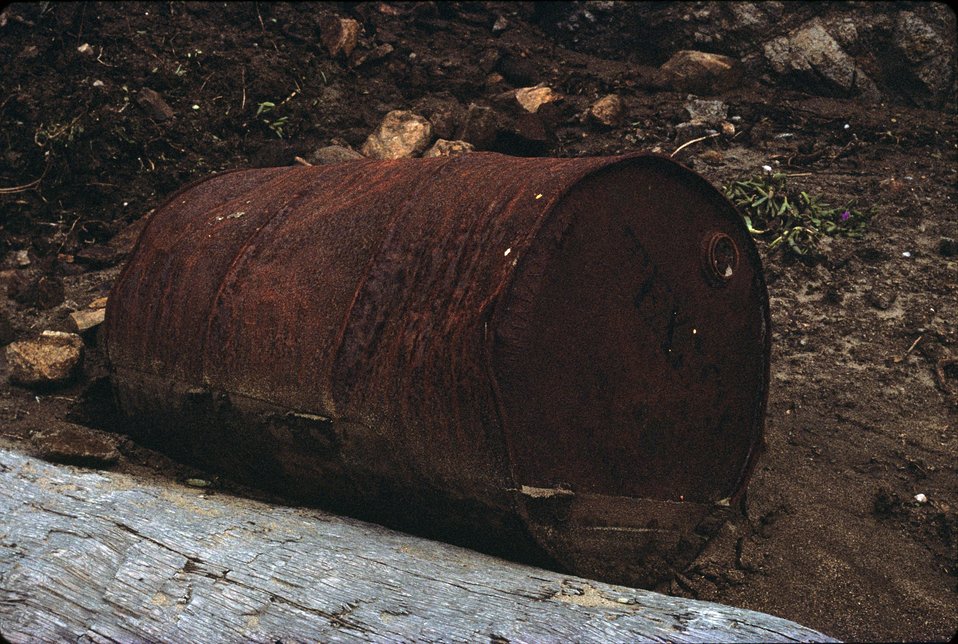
Point Reyes Great Beach. Marine debris chemical drum far above the tide line.